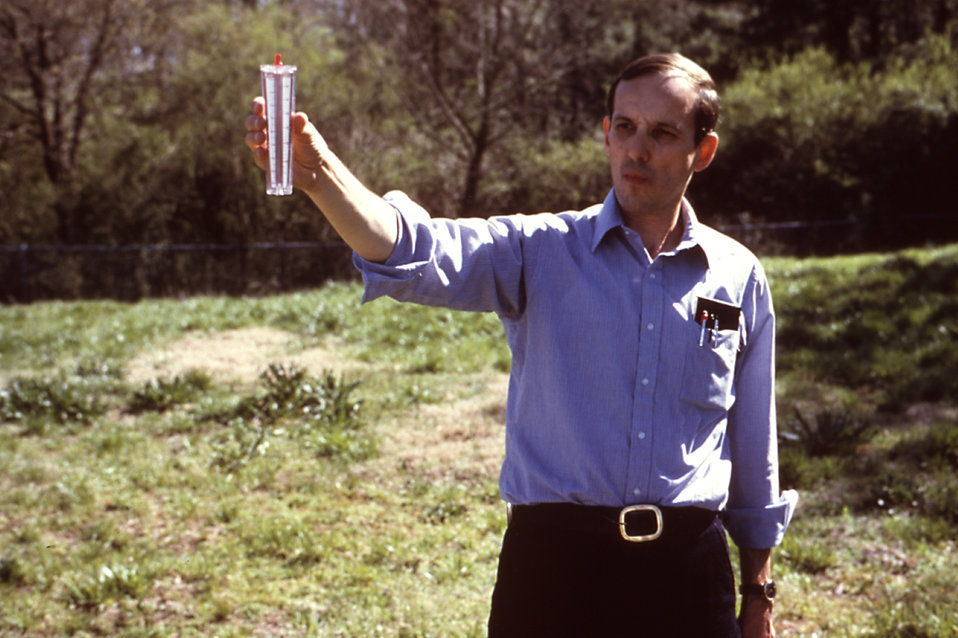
This 1981 photograph depicted a field technician as he used a wind gage in order to measure the wind velocity in the immediate area into which an insecticide was to be introduced by an ultra low volume (ULV) fogger.